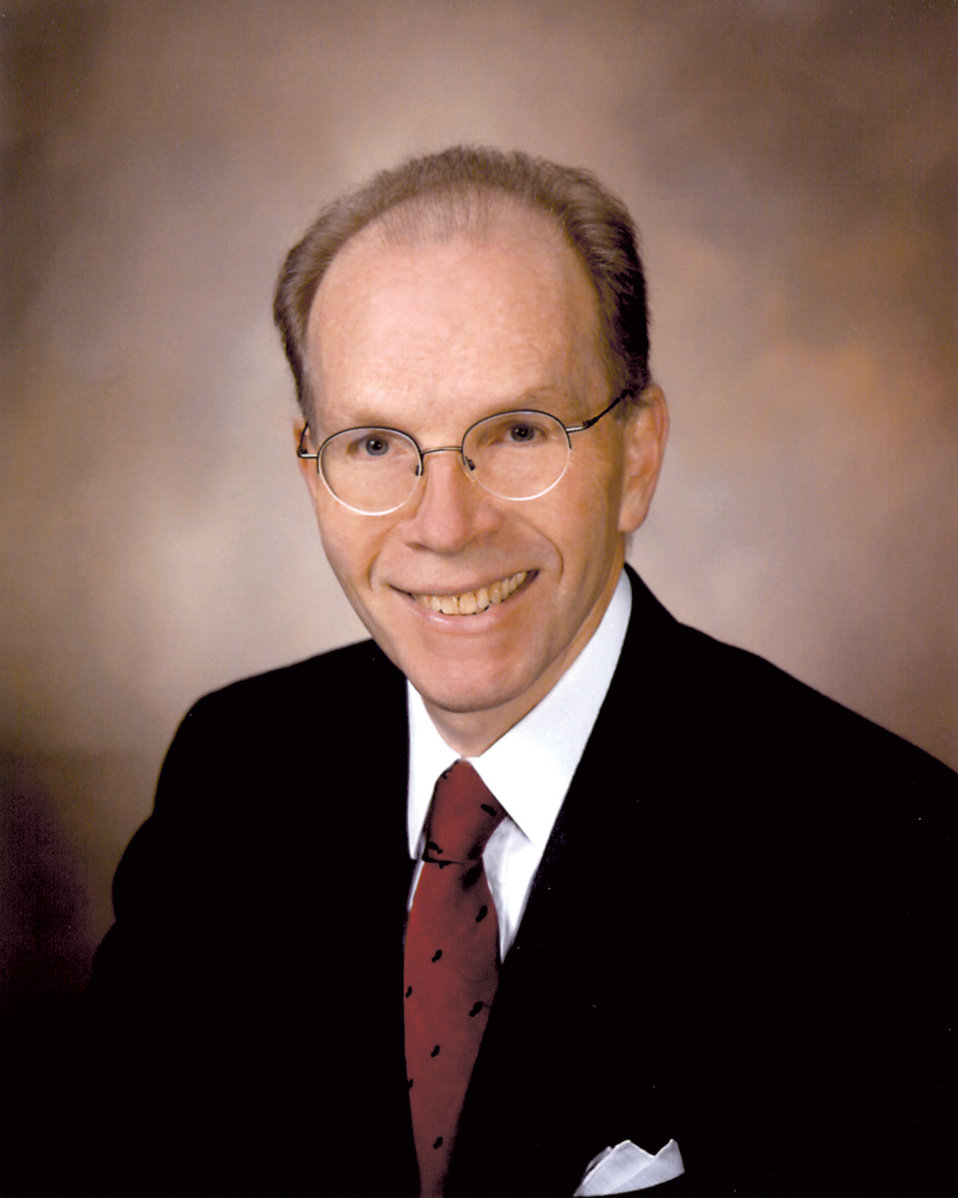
This is Jeffrey Koplan, M.D., M.P.H., former Centers for Disease Control and Prevention Director from 1998 - 2002, and Epidemic Intelligence Service Officer (EIS), class of '72.In April 2002, Dr. Koplan was appointed Vice President for Academic Health Affairs of Emory University's Woodruff Health Sciences Center. In this position, he is responsible for the coordination and oversight of academic matters, including research and education in the university's schools of medicine, nursing, and public health, as well as the Yerkes National Primate Research Center.